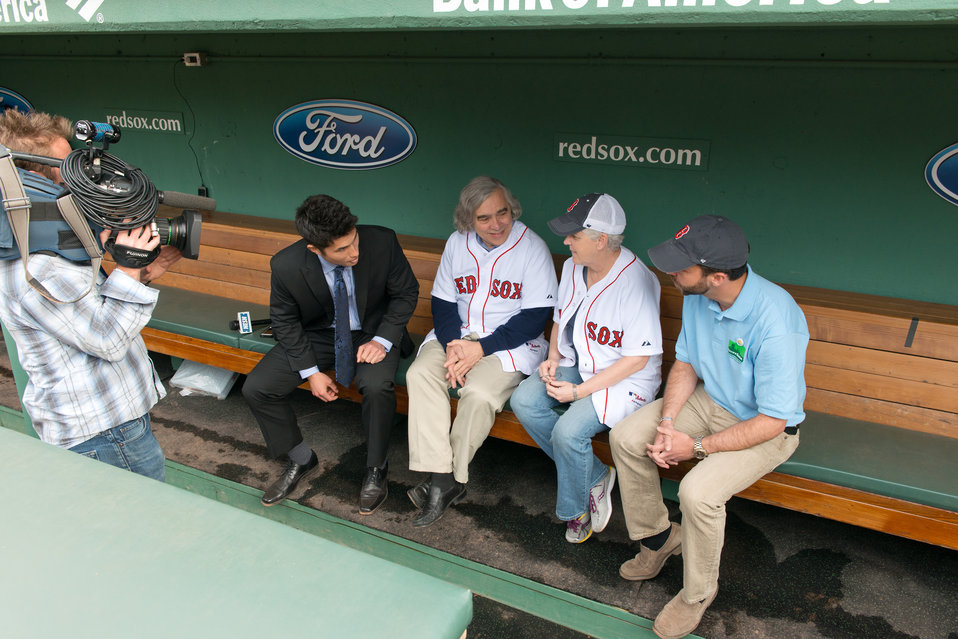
2014-04-22 boston 061